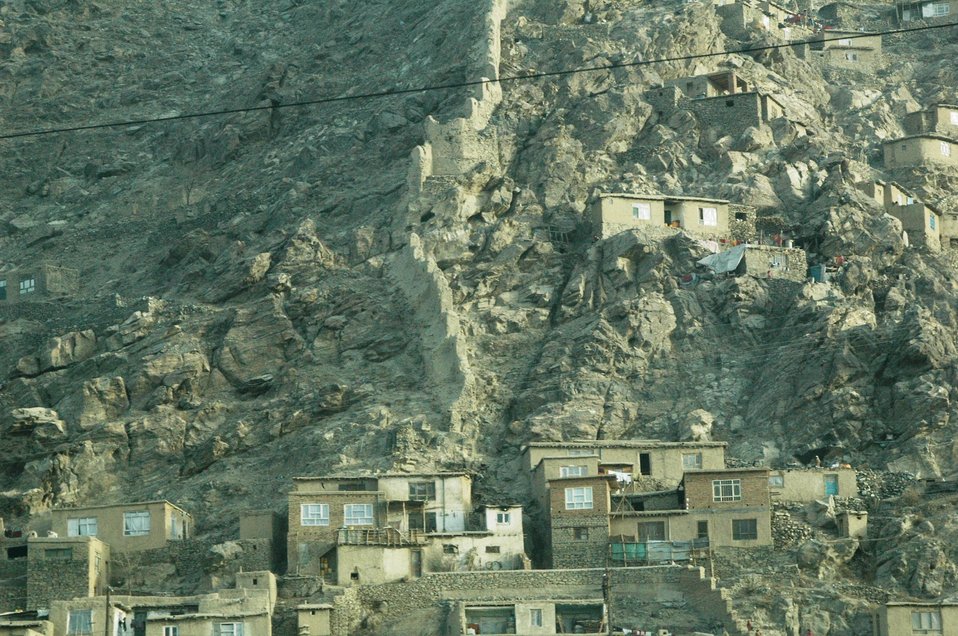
Community Based Stabilization Grants Ceremony, December 7, 2010